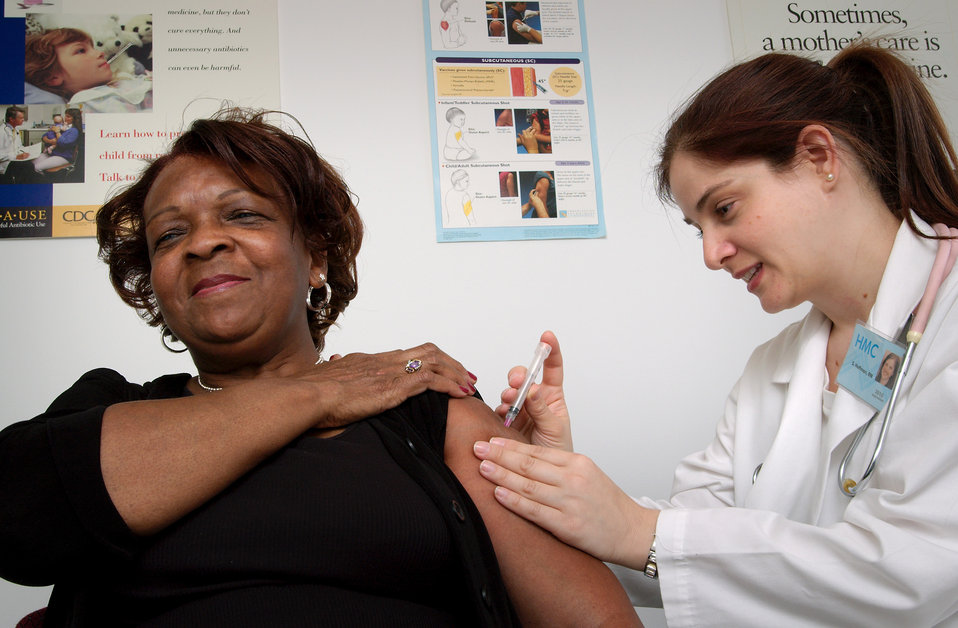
Depicted here in this 2006 image was a middle-aged woman who was in the process of receiving an intramuscular injection from a qualified nurse. The nurse had chosen the woman's left shoulder muscle as the injection site, and was using her left hand to stabilize the area.